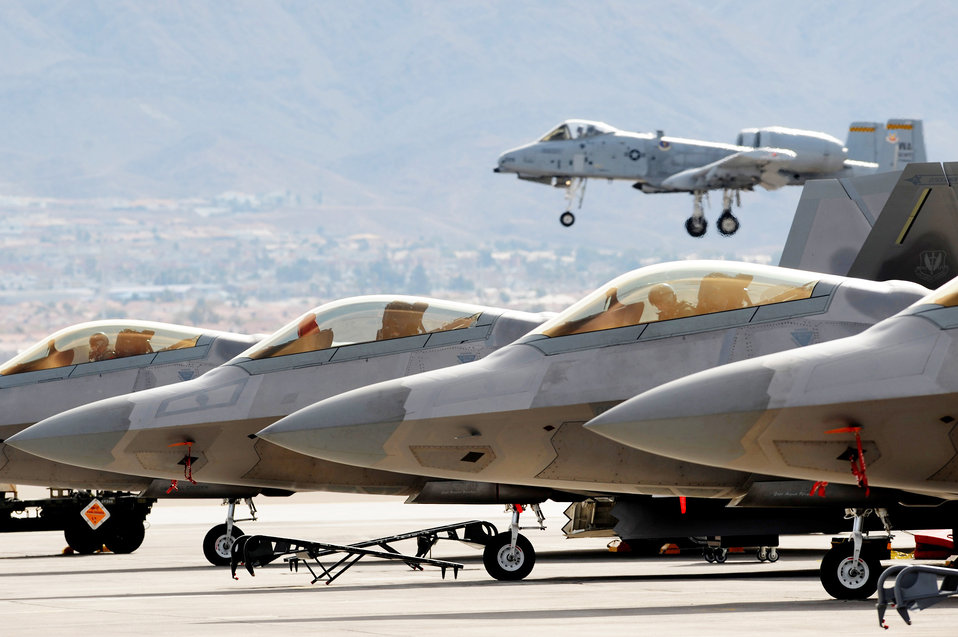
Raptors reign at Red Flag

F-22 Raptors are ready to go on the flightline at Nellis Air Force Base, Nev., Feb. 4, 2010, for a Red Flag training mission. Red Flag is a realistic combat training exercise involving the air forces of the United States and its allies. The Raptors are assigned to the 525th Fighter Squadron at Elmendorf AFB, Alaska, and the 49th FS at Holloman AFB, N.M.